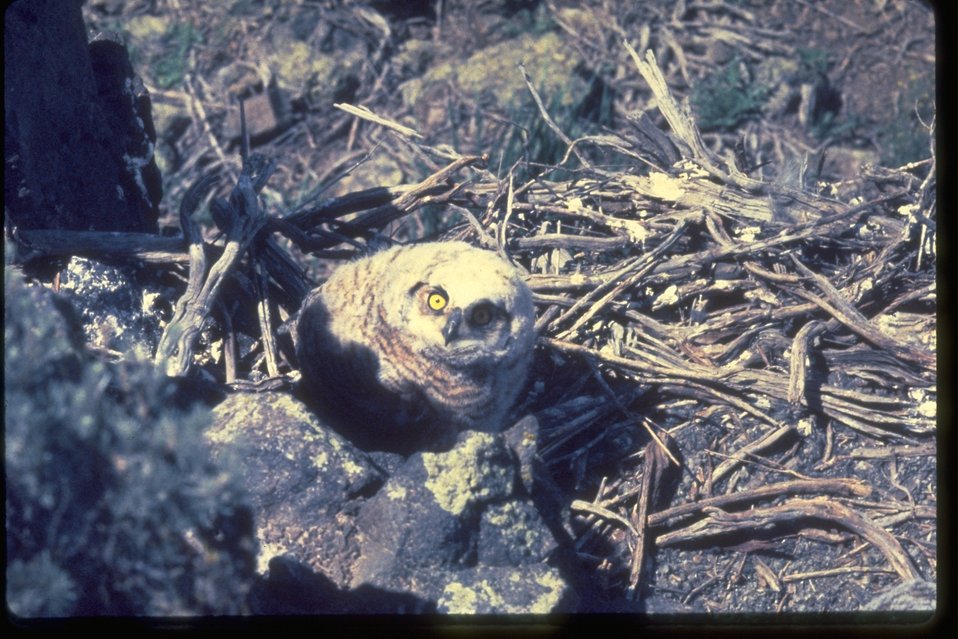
Fledgling Great Horned Owl in BLM-constructed nest in Lincoln County, Washington.